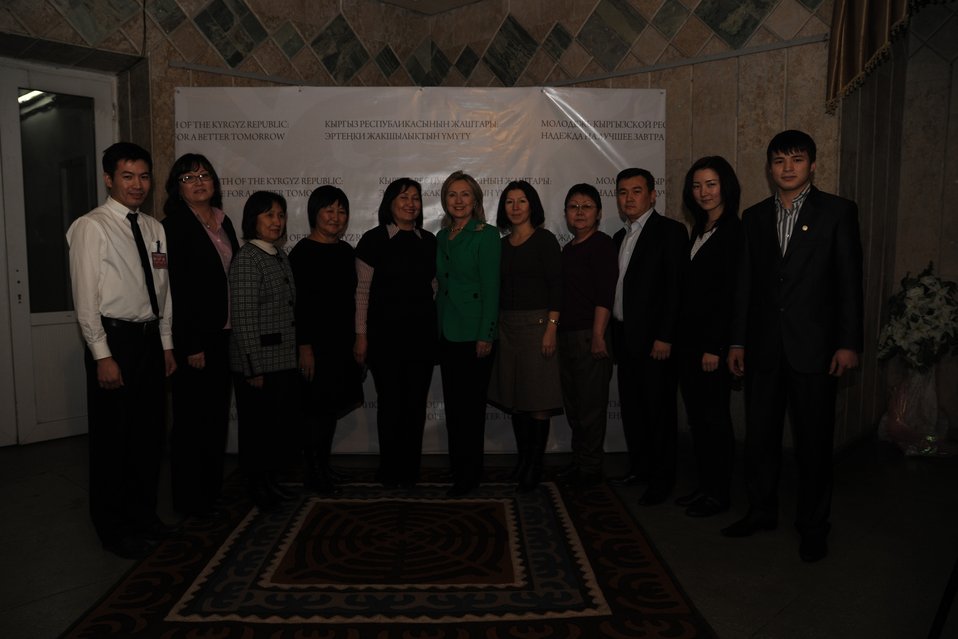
Secretary Clinton Poses With Kyrgyz Civil Society Leaders

U.S. Secretary of State Hillary Rodham Clinton poses for a photo with Kyrgyz civil society leaders in Bishkek, Kyrgyzstan, on December 2, 2010.